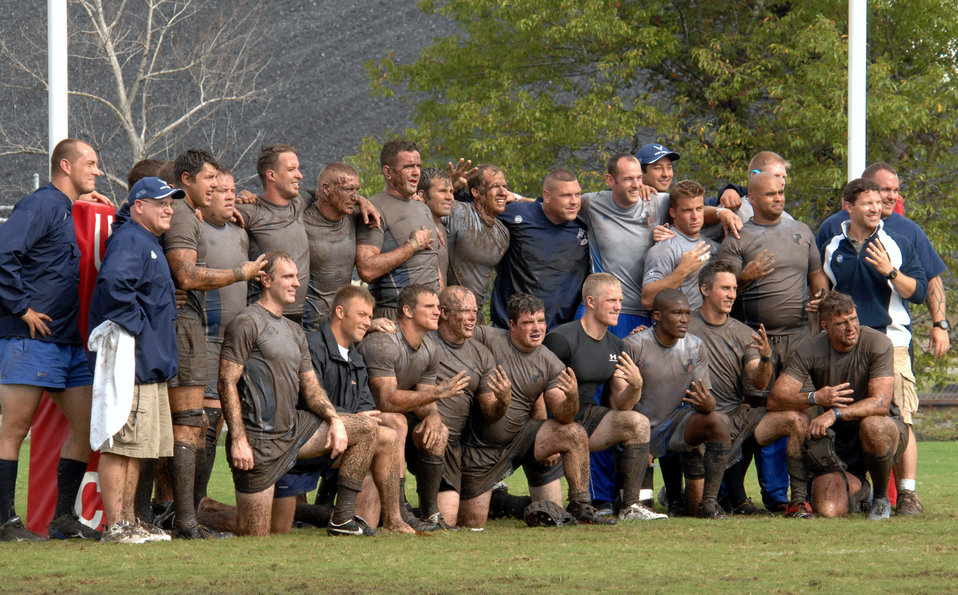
Air Force triumphs over Army

Members of the Air Force rugby team pose for a photo after their 22-5 victory over the Army during the 2007 Armed Forces Rugby Tournament, Oct. 27 at Marine Corps Base Camp Lejeune, N.C.